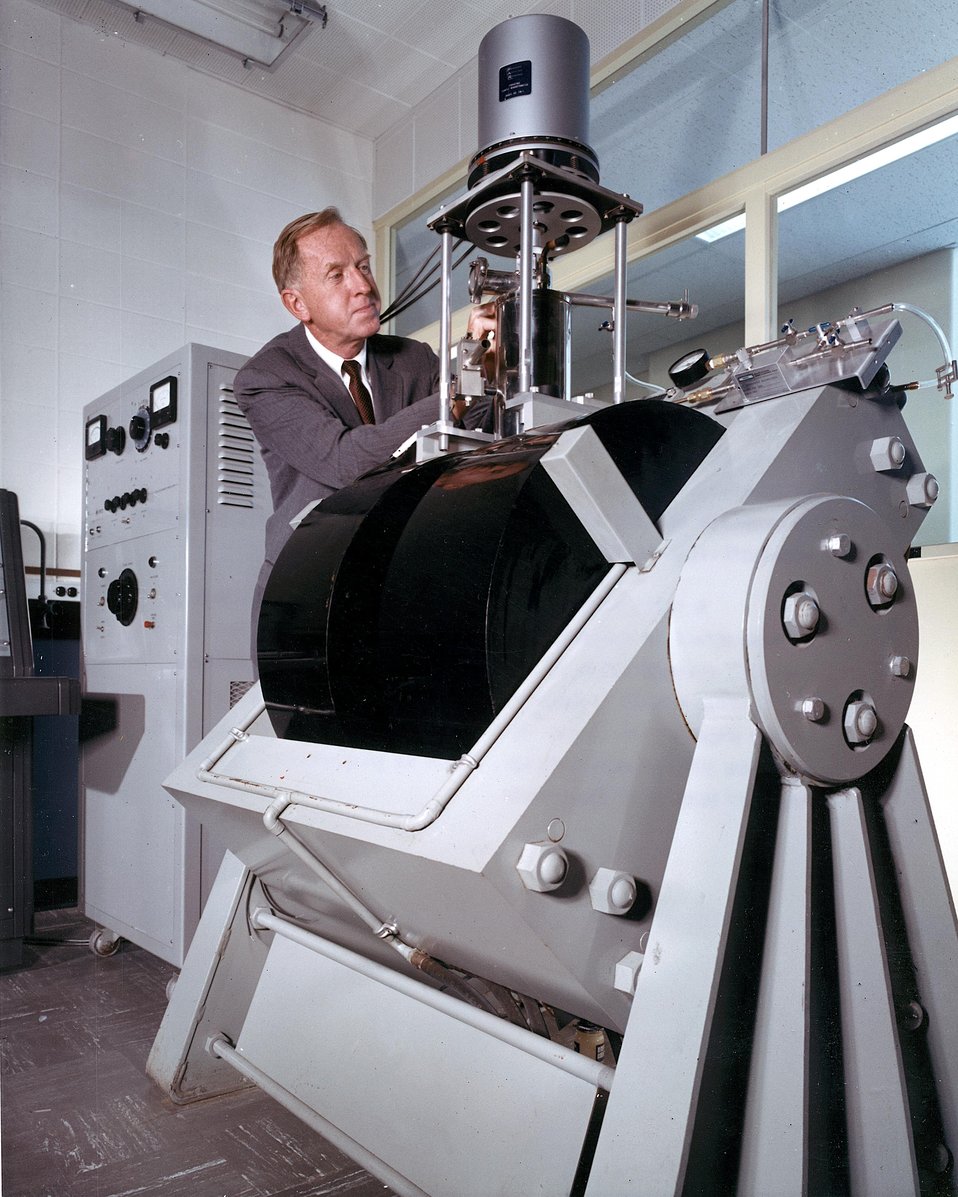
A vibrating sample magnetometer is being used to measure the magnetic
moments of solids. This type of measurement is part of a general program to study
and interpret the magnetic properties of crystals by neutron diffraction, electron spin,
and magnetic susceptibility measurements.